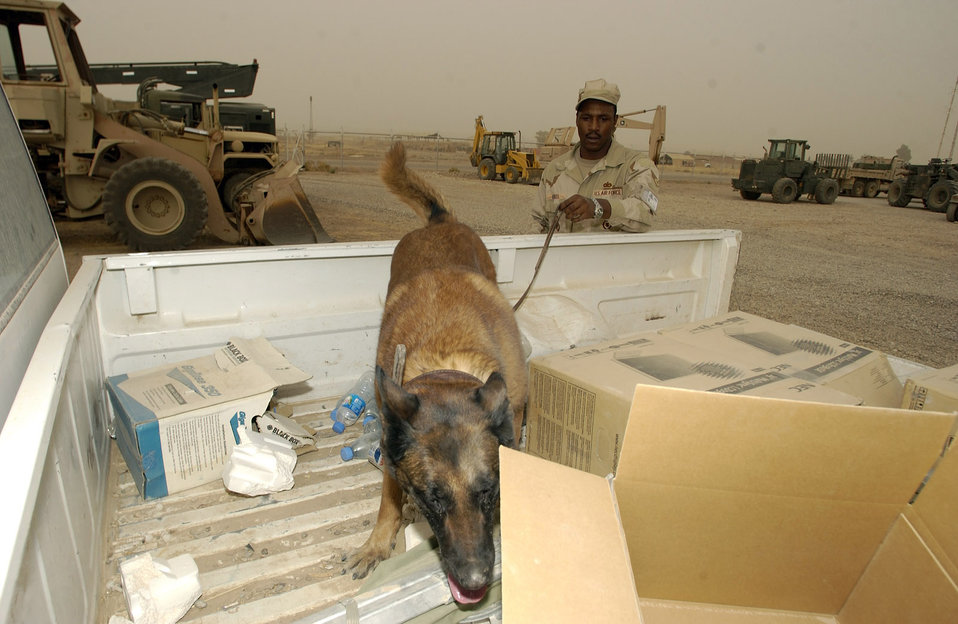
K-9 teams keep Kirkuk safe

KIRKUK AIR BASE, Iraq -- Staff Sgt. Willie Harrell and his military working dog, Tasja, search a truck during training here. The K-9 teams perform constant training to ensure they are working as a team. Sergeant Harrell is assigned to the 506th Expeditionary Security Forces Squadron.